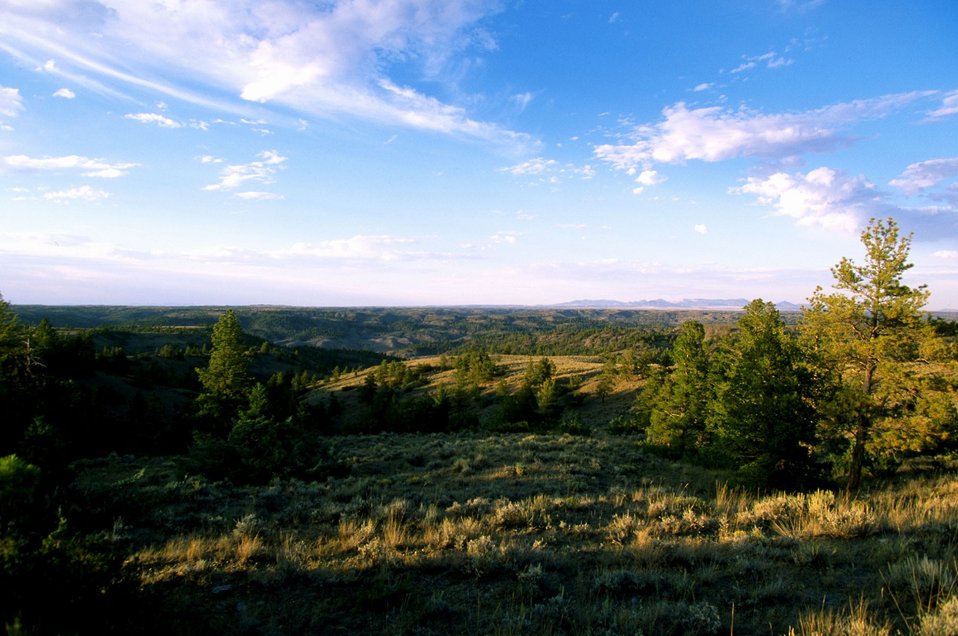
Missouri Breaks Scenery